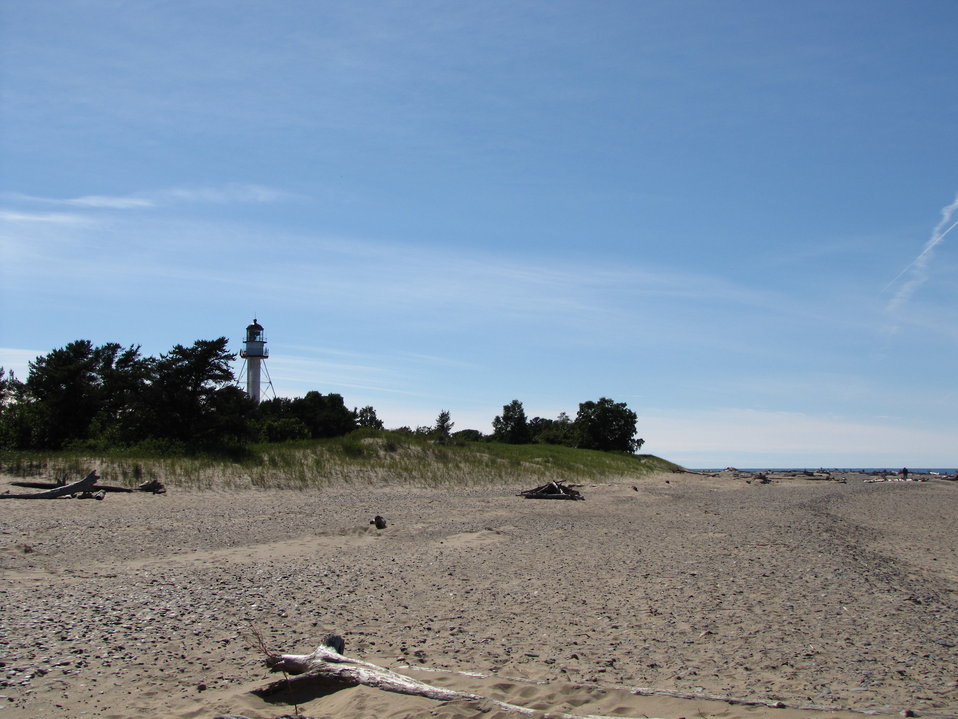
Whitefish Point Unit of Seney National Wildlife Refuge.